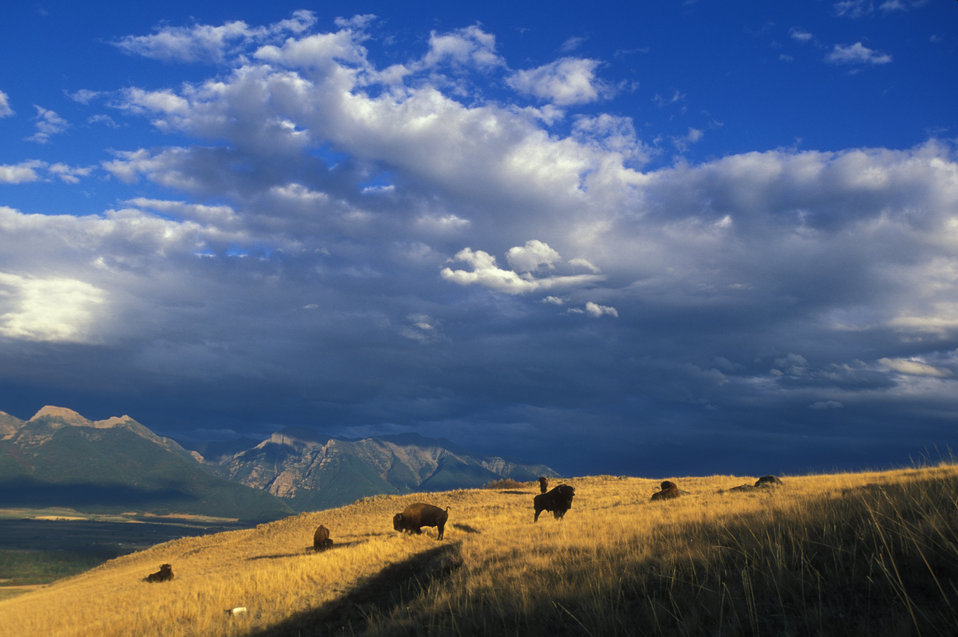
Bison out on the range

Buffalo out on the range grazing. Resource links:http://www.fws.gov/bisonrange/nbr/